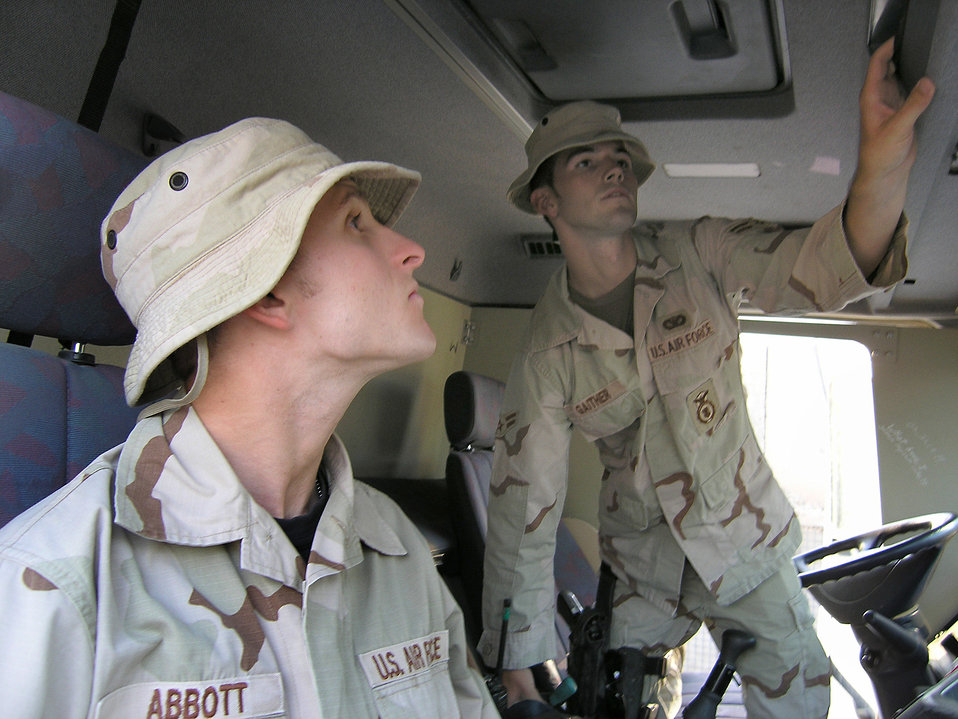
Volunteers help keep Airmen safe by searching vehicles

ALI BASE, Iraq -- Airman 1st Class Adam Gaither (right) shows volunteer Senior Airman Ben Abbott how to search a truck at the visitor control center here to make sure it is free of explosives or contraband items. Airman Gaither is assigned to the 407th Expeditionary Security Forces Squadron, and Airman Abbott is assigned to the 407th Expeditionary Communications Squadron.